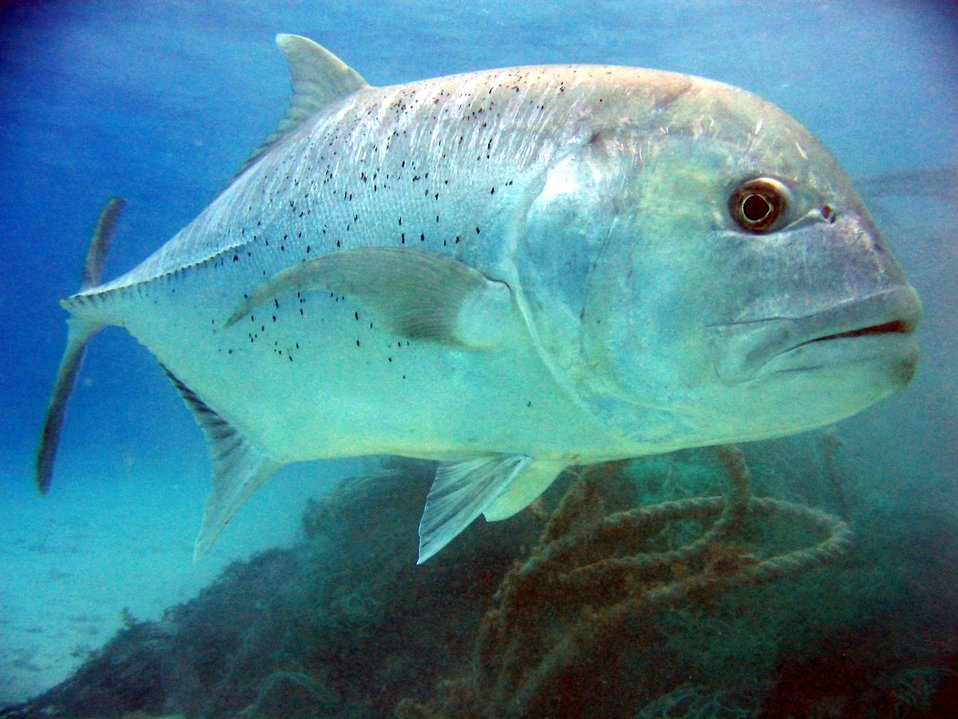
Giant trevally (Caranx ignobilis). Ulua in Hawaiian language.